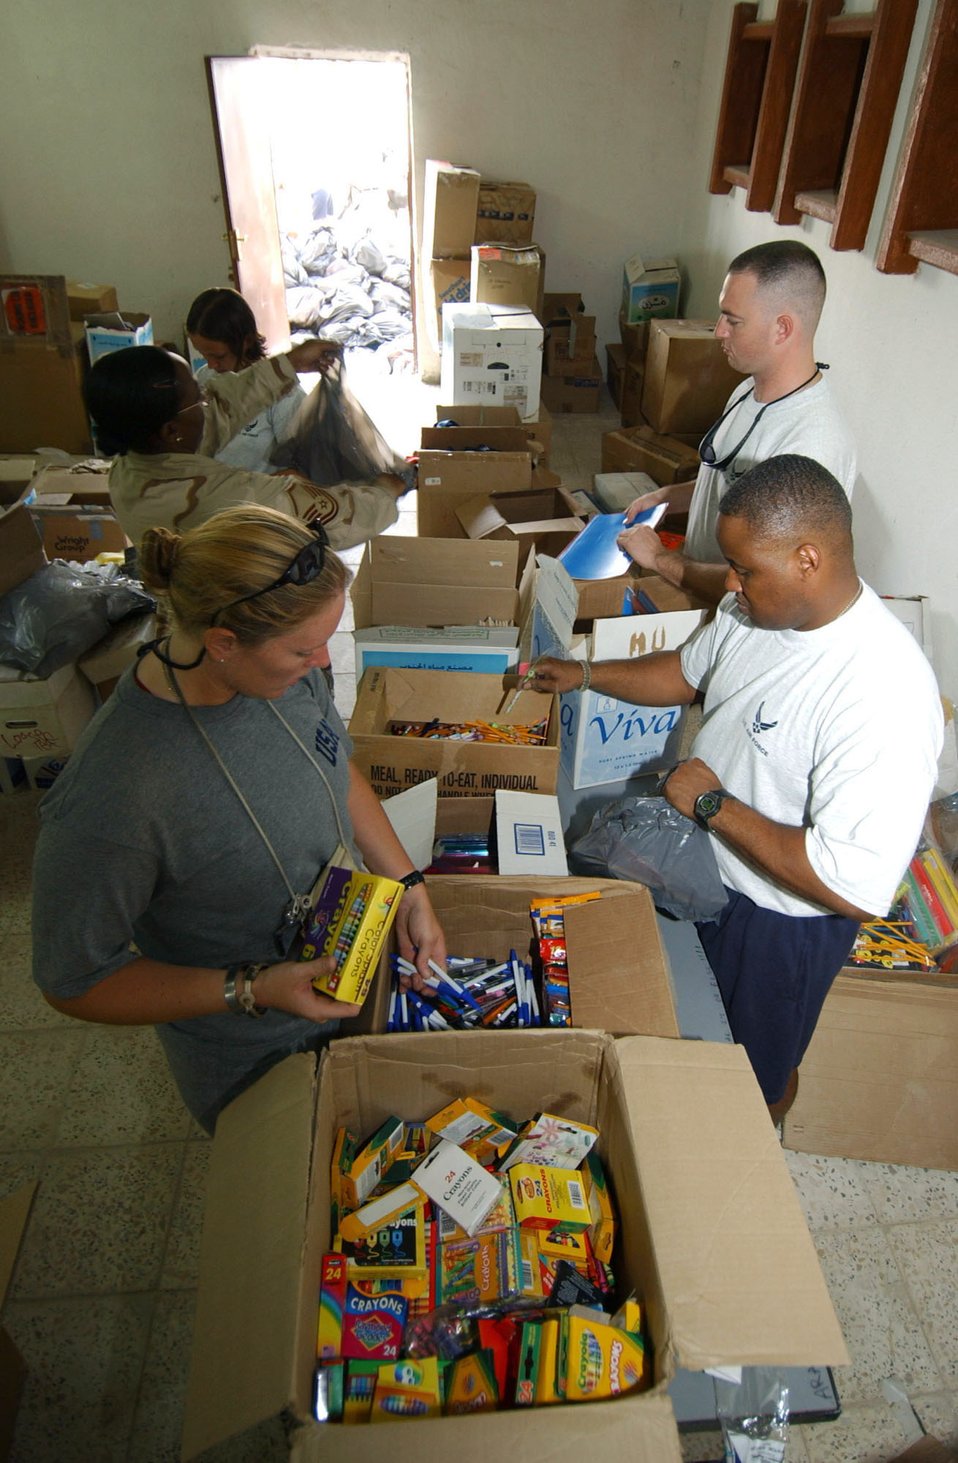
Airmen come together for humanitarian service

BALAD AIR BASE, Iraq -- Airmen from the 332nd Air Expeditionary Wing here organize school supplies and toys to be delivered to a local school.